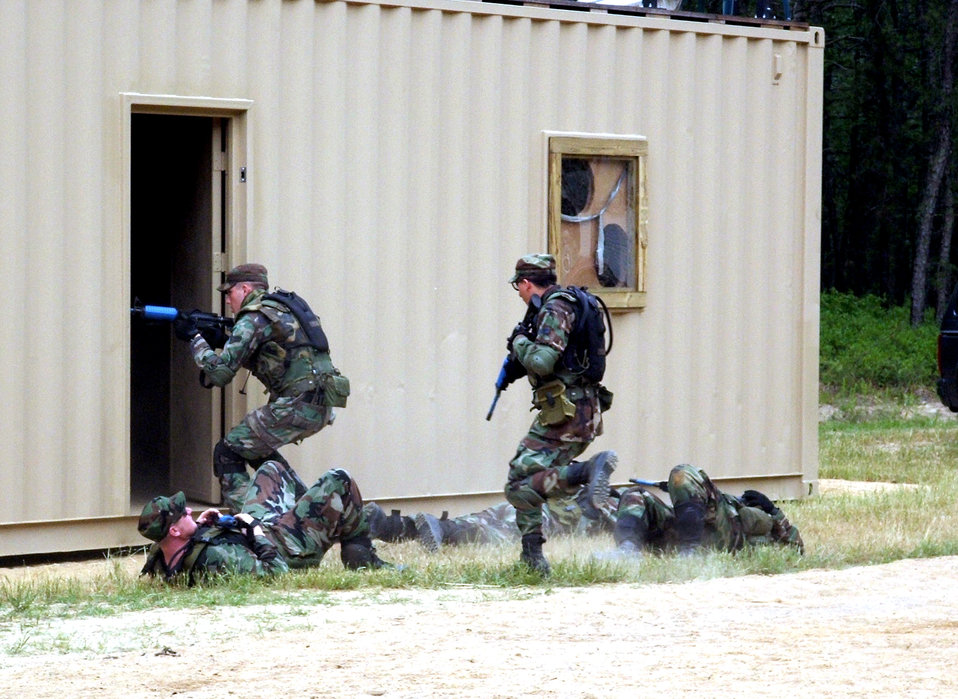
Contingency skills training

Students practice urban tactics during Air Force Integrated Contingency Skills Training Course 06-4 at Naval Air Engineering Station Lakehurst, N.J., on Thursday, June 22. More than 165 students are participating in the course. Students also learn convoy training in preparation for deployments. The training is taught by staff at the Air Mobility Warfare Center's 421st Combat Training Squadron.